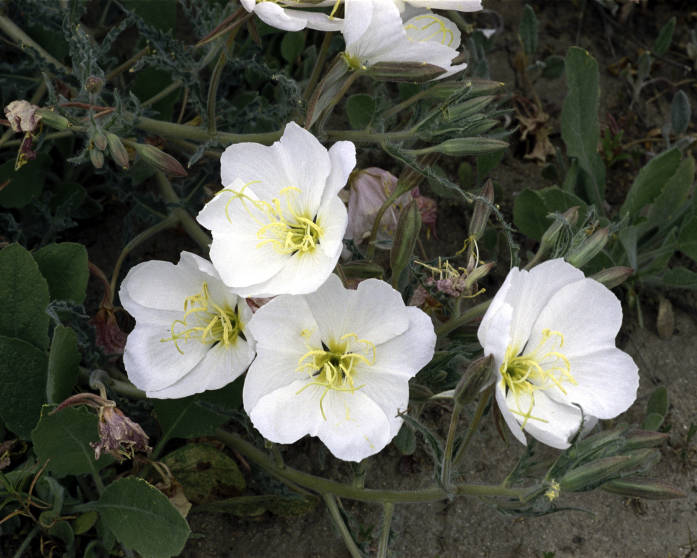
evening primrose

Antioch Dunes National Wildlife Refuge, CA